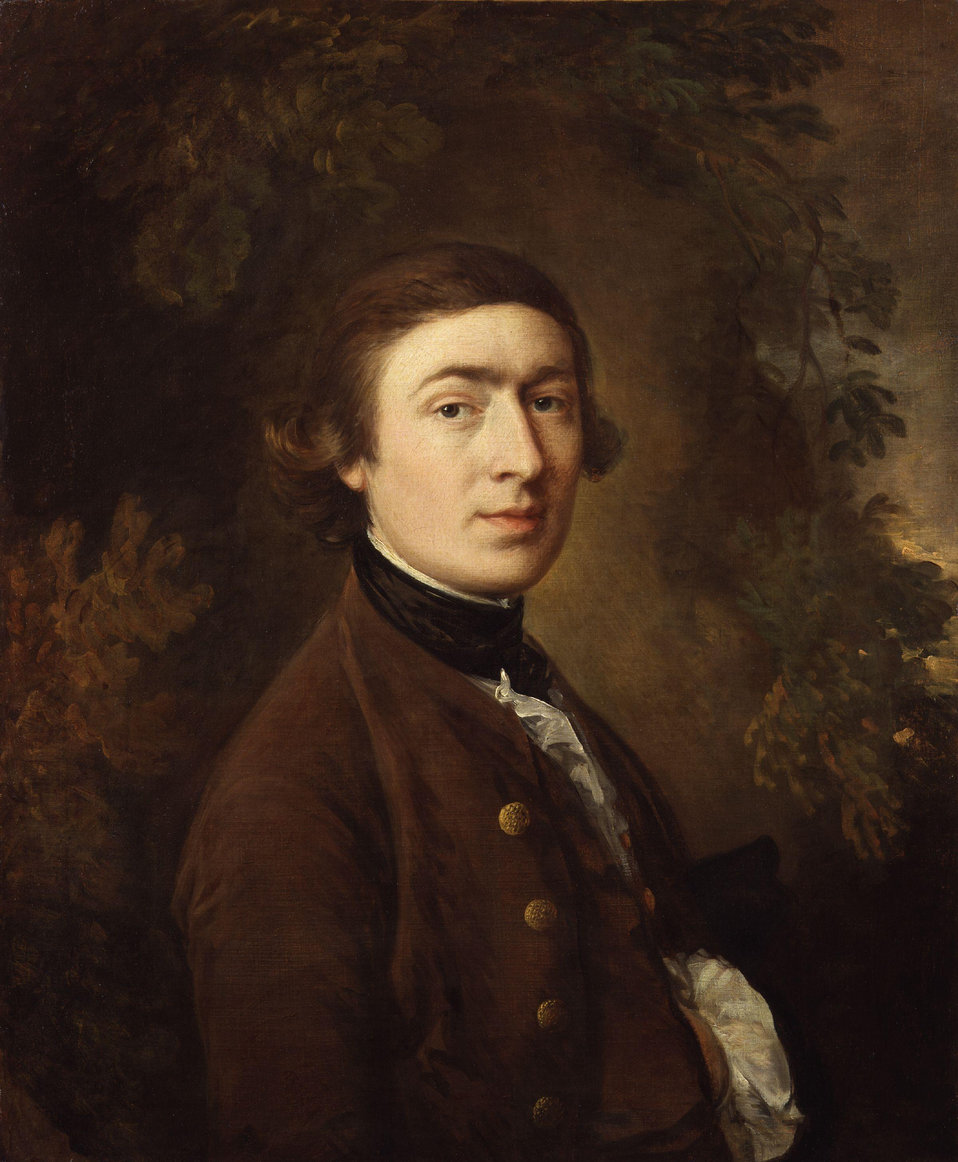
Thomas Gainsborough by Thomas Gainsborough